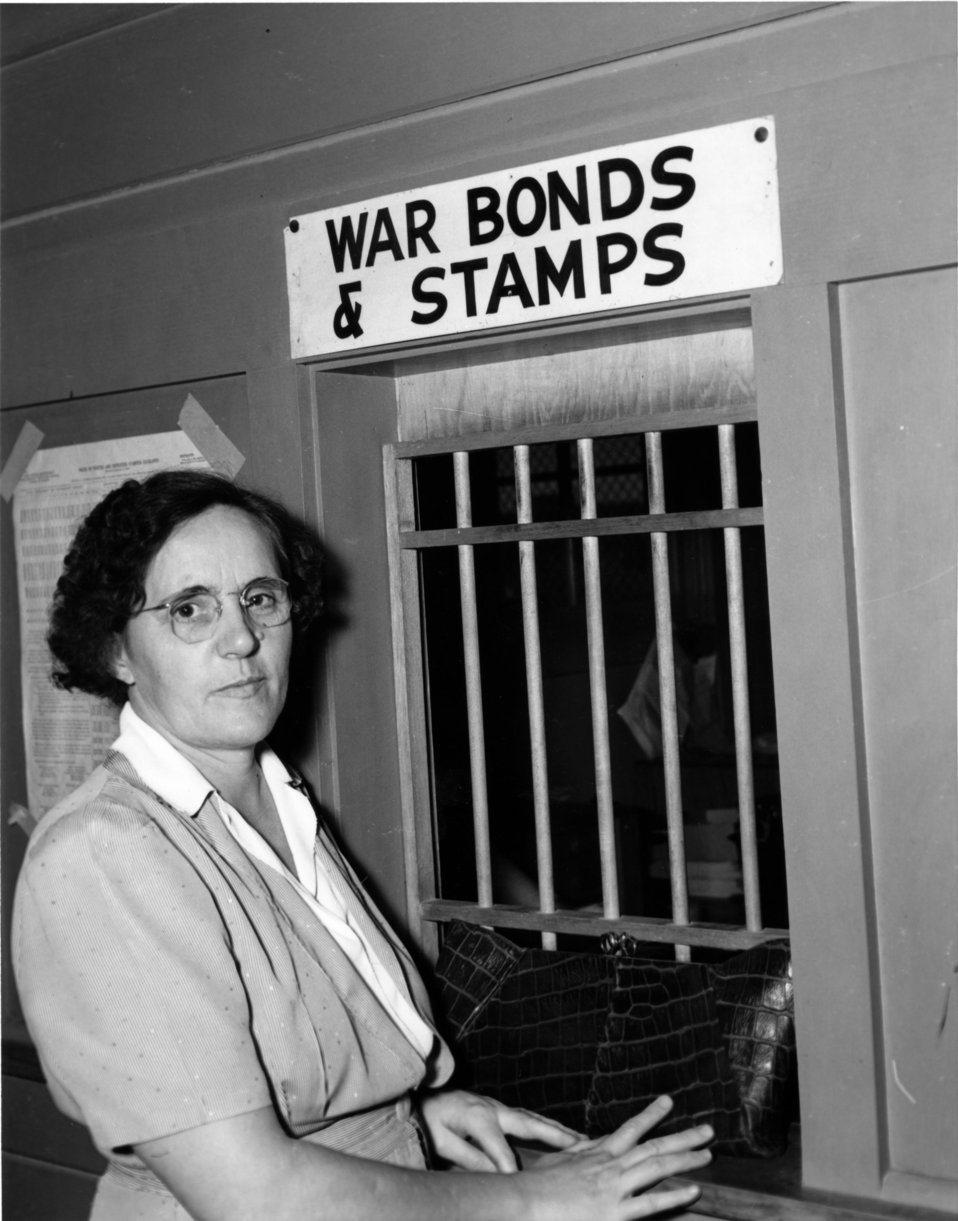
Daily Life at Oak Ridge